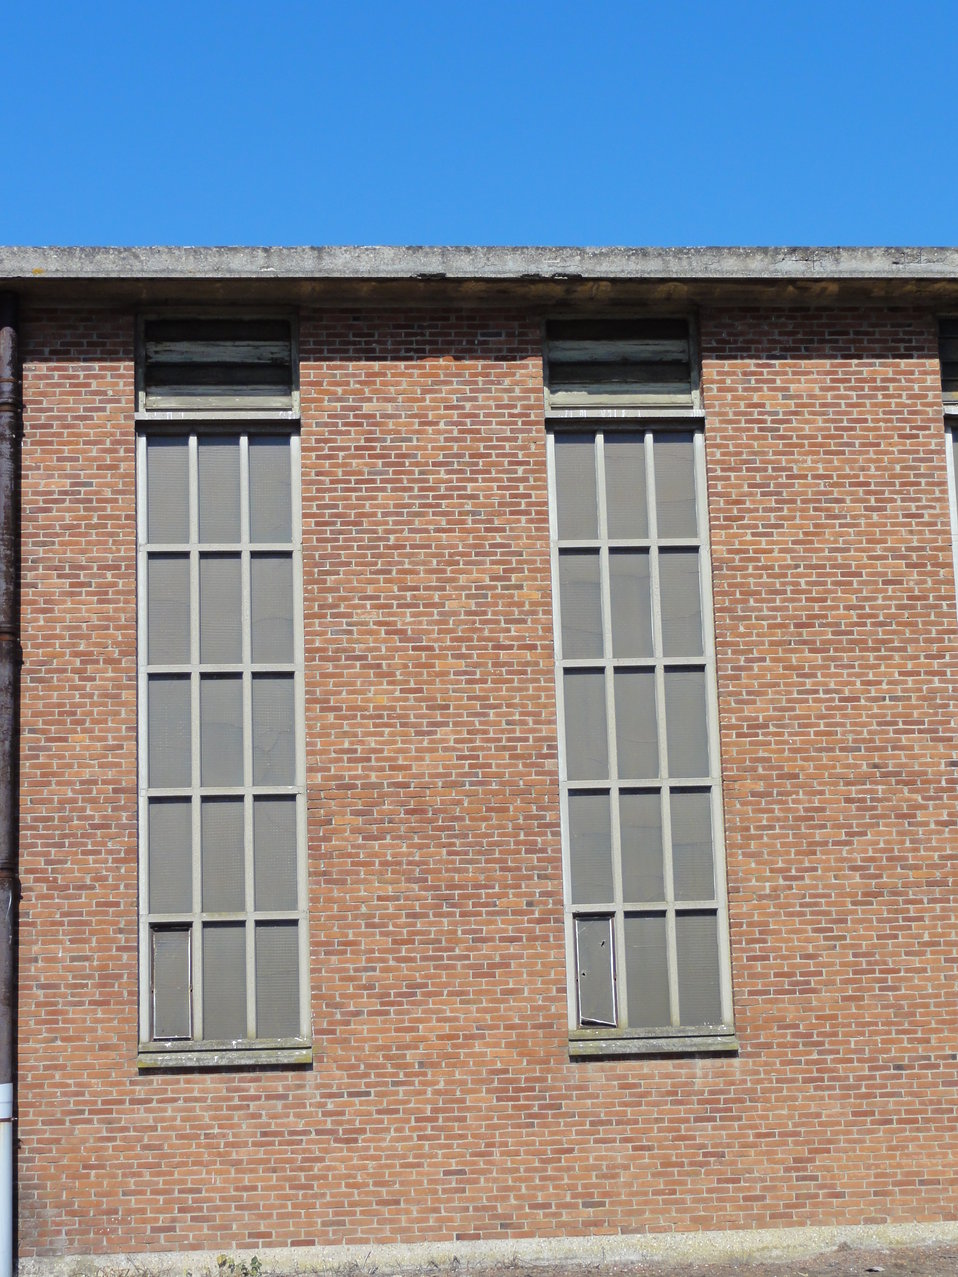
Fran√ßais†: La Fosse n¬∞ 13 - 13 bis du Groupe de B√©thune √©tait un charbonnage constitu√© de deux puits situ√© √† Sains-en-Gohelle, Pas-de-Calais, Nord-Pas-de-Calais, France.